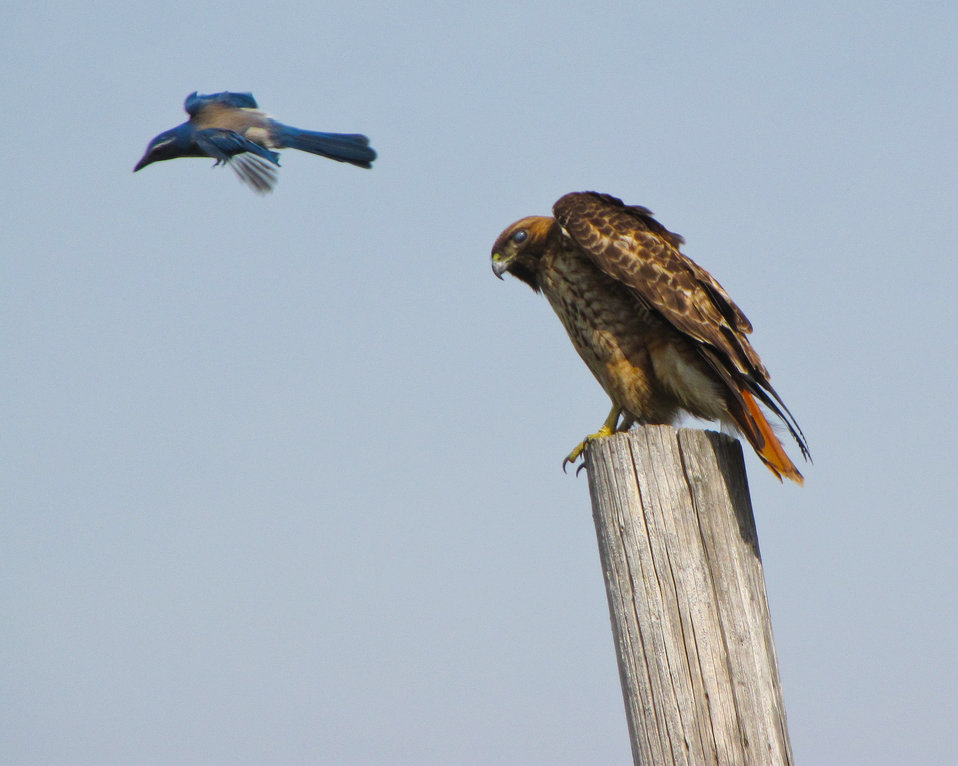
Red-tailed hawk allows another bird entry into its air space near Corps construction site

A perched, red-tailed hawk allows a western scrub-jay entry into its air space April 20, 2012. The hawk is one of two migratory hawks nesting near the U.S. Army Corps of Engineers Sacramento District’s construction site in West Sacramento, Calif. District biologists are making sure the hawks are not disturbed during the levee work since they arrived after construction resumed this spring, and are protected under the Migratory Bird Treaty Act of 1918.